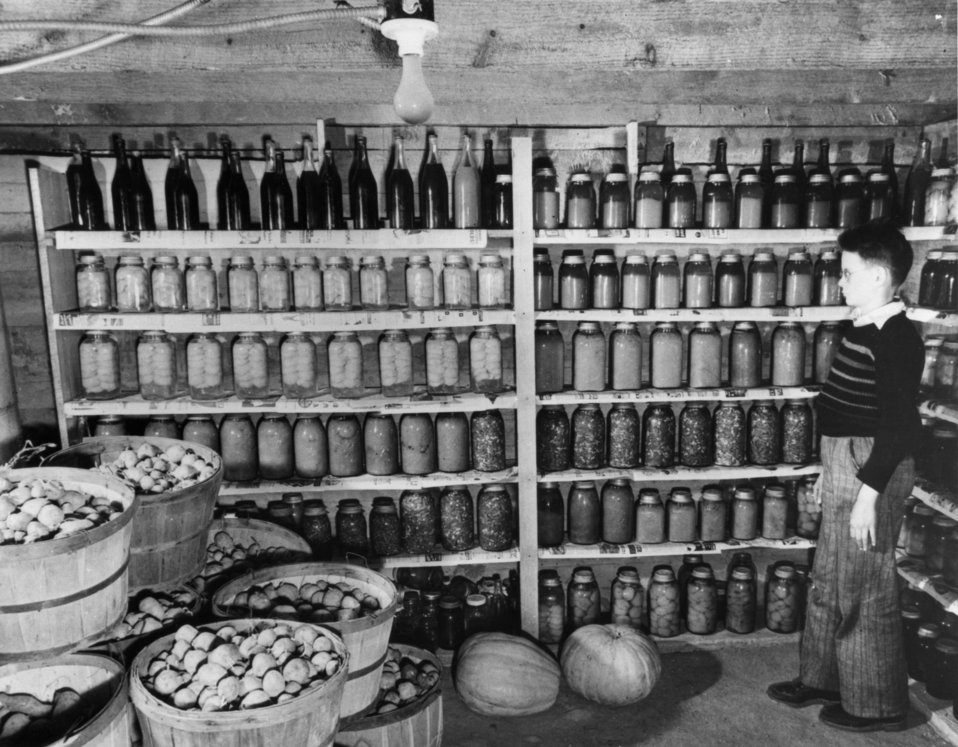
Early settlers at Oak Ridge